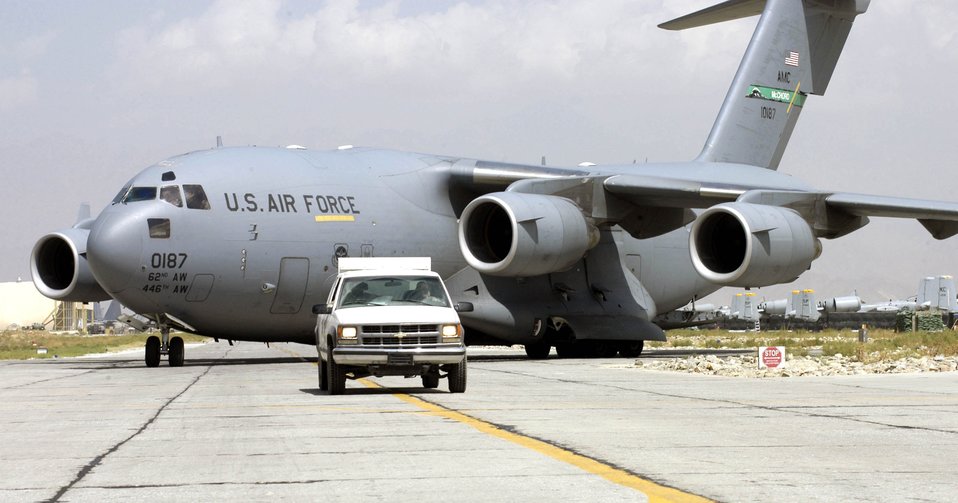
Bagram team parks 2,000th transient aircraft

Tech. Sgt. Michael Leach and Staff Sgt. Gordon Torrey drive a